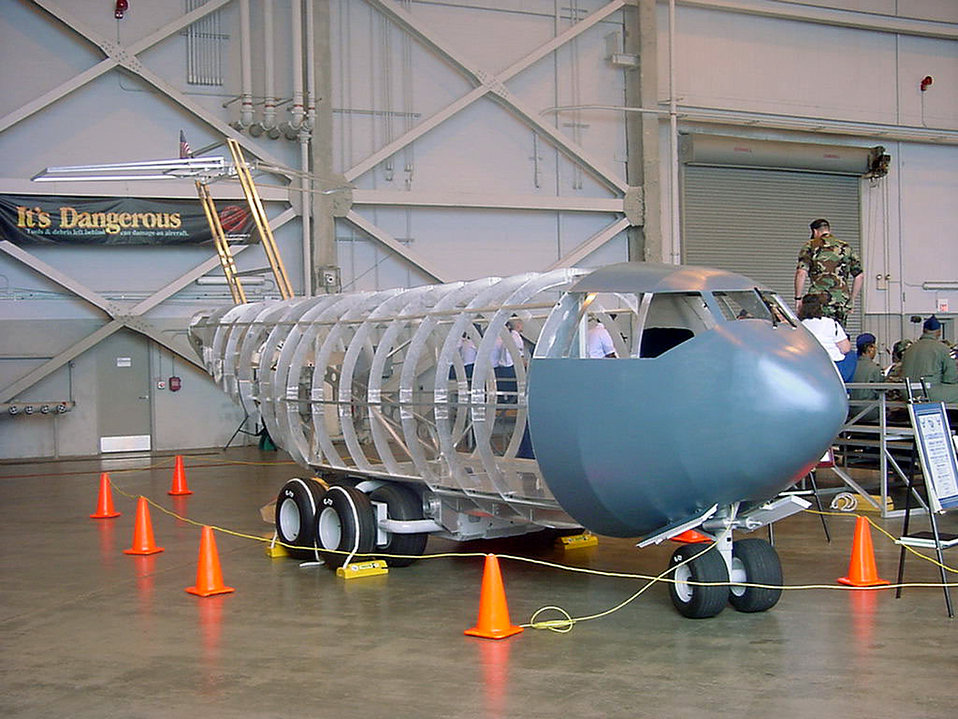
C-17 model

CHARLESTON AIR FORCE BASE, S.C. -- Volunteers from the 315th and 437th airlift wings here are building a small-scale replica of a C-17A Globemaster III. When completed, the replica will be used as a recruiting tool at air shows, schools, parades and other community events.